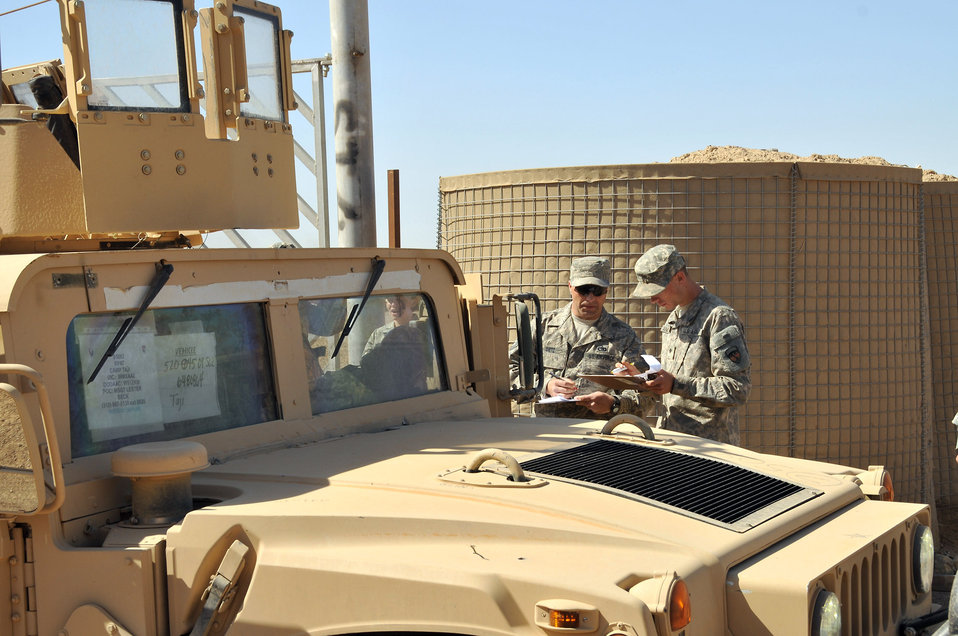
Airmen distribute Humvees to Iraqi forces

Tech. Sgt. Joseph Dietz and Army Spc. Justin Anderson take accountability of an M1114 Humvee as U.S. and Iraqi army soldiers drive the Humvees to the Iraqi-run section for further processing in March at Camp Taji, Iraq. Sergeant Dietz is assigned to the 732nd Air Expeditionary Group and is the Taji Redistribution Property Assistance Team yard boss. He is deployed from Moody Air Force Base, Ga., and is from East Islip, N.Y. Specialist Anderson is a 419th Command Sustainment Support Battalion light wheel vehicle mechanic deployed from March Air Reserve Base, Calif.